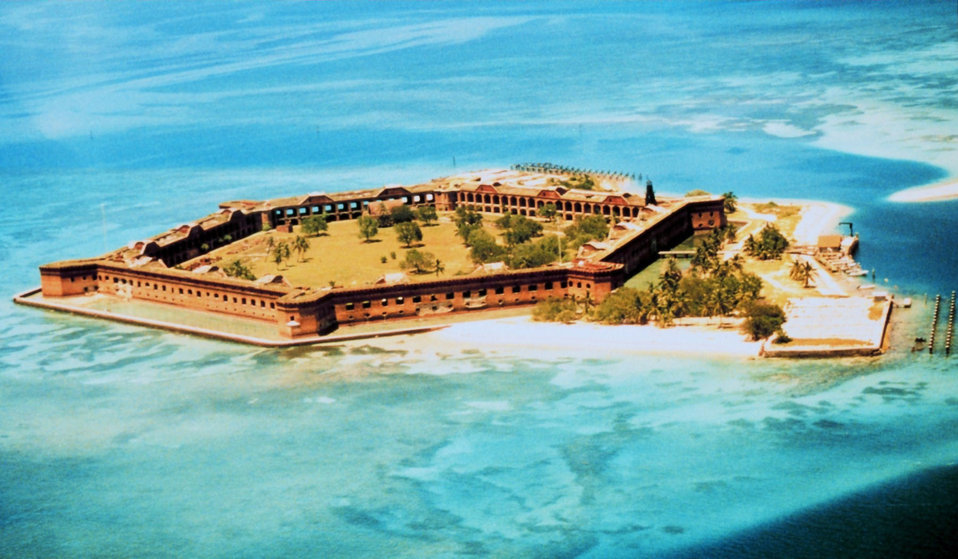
Aerial view of Fort Jefferson